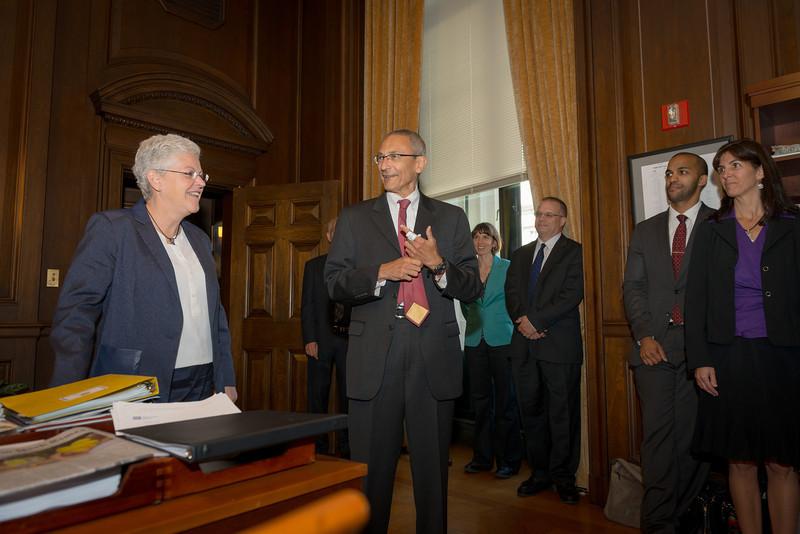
Day in the Life - June 2, 2014

9:43 am - John Podesta, Counselor to the President, stopped by McCarthy’s office to congratulate her and the EPA team on the key step in working to implement the White House’s Climate Action Plan. (3/15)